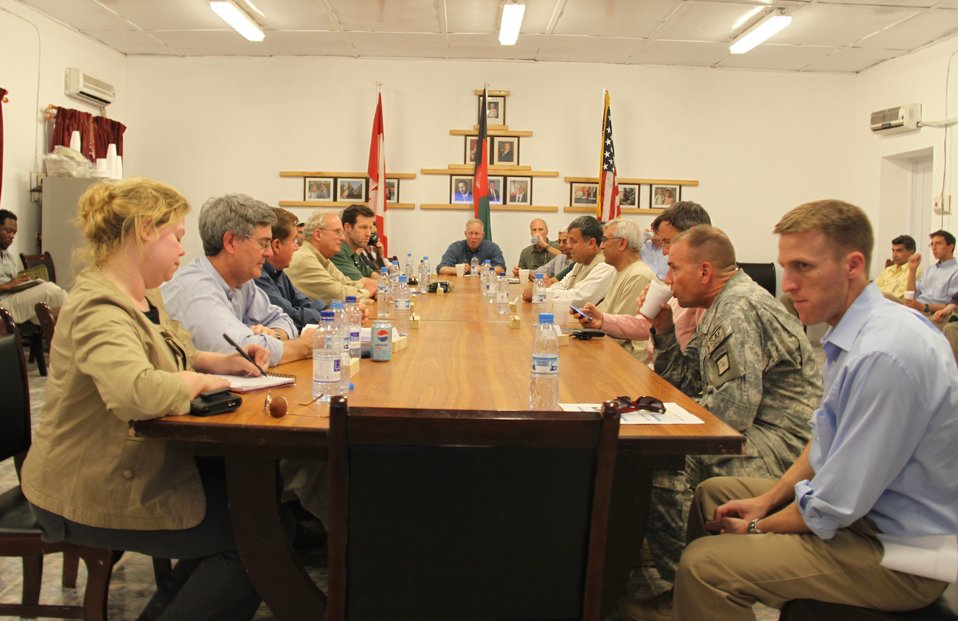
Meeting with Local Leaders in Kandahar